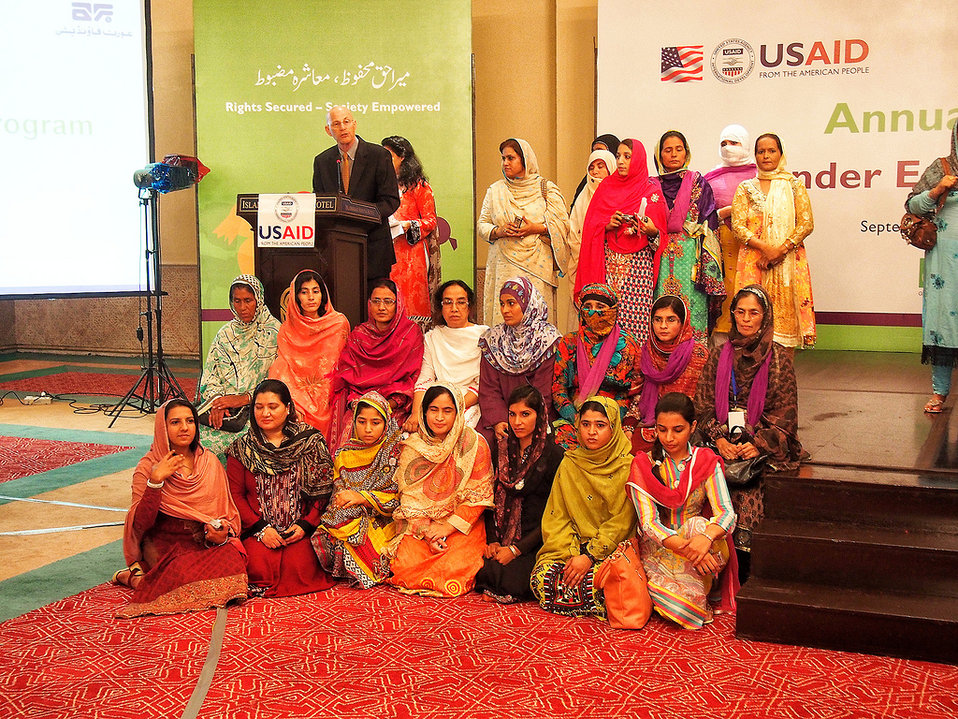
Gender Equity Program, Pakistan

USAID and Aurat Foundation annual event in Islamabad, Sept. 20, 2013